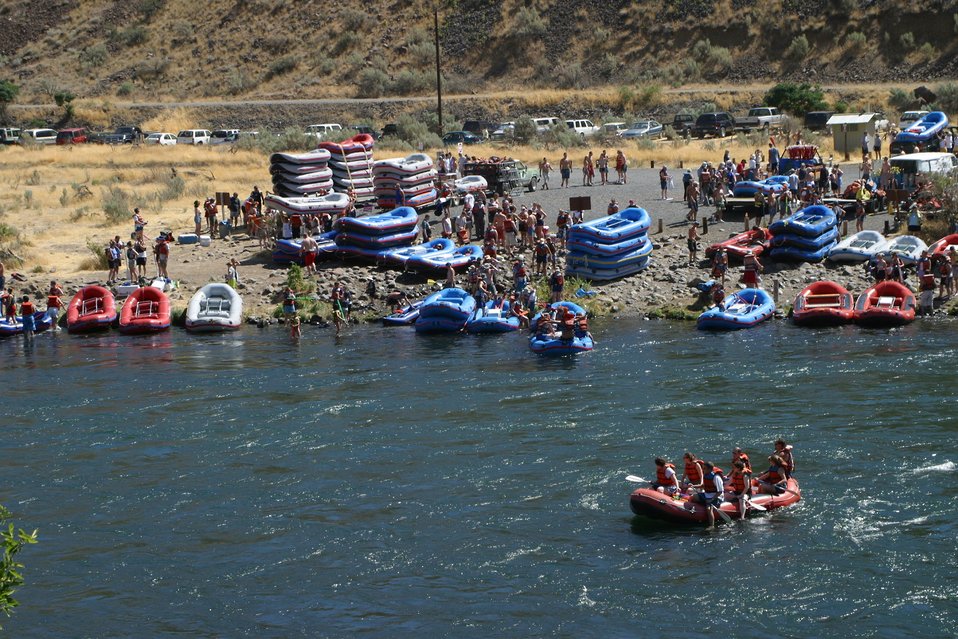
Over 200,000 people a year float the Lower Deshutes River.